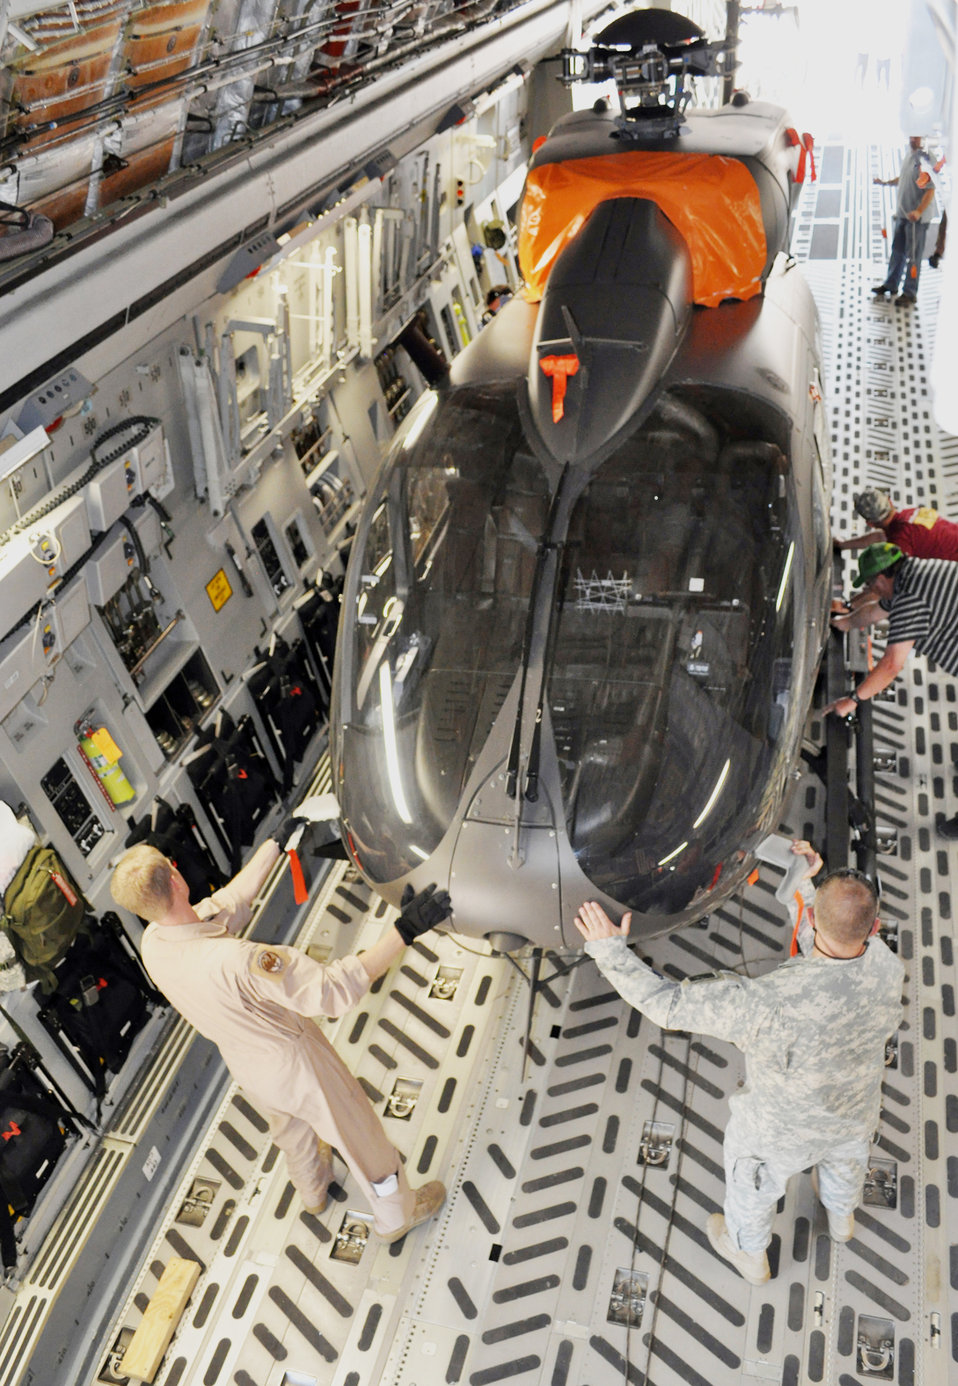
Airmen deliver new Army helicopter to war zone

Army Chief Warrant Officer Five John Jones and Tech. Sgt. Charles Boulton help guide a UH-72 Lakota light utility helicopter into a C-17 Globemaster III April 12, 2010, at Columbus Air Force Base, Miss. Chief Warrant Officer Jones is a Army light utility helicopter program acceptance pilot and Sergeant Boulton is a C-17 loadmaster assigned to the 172nd Airlift Wing.